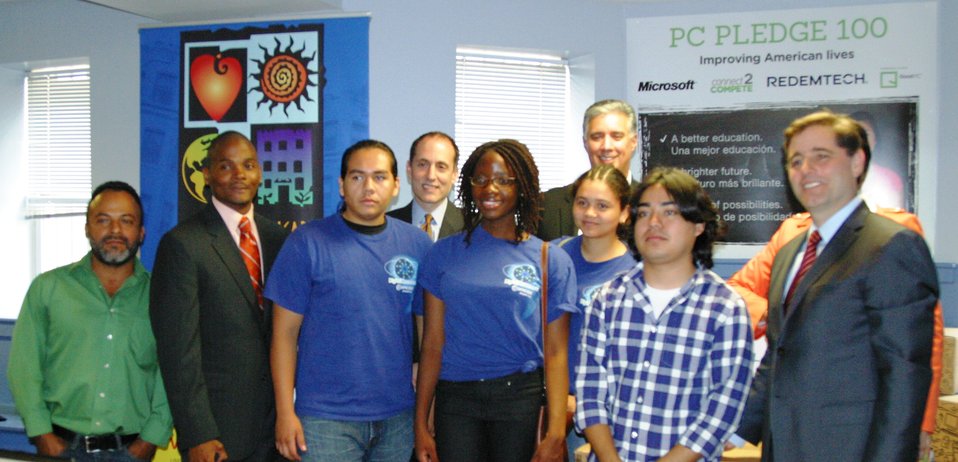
Connect 2 Compete: LULAC 8.7.12

FCC Chairman Genachowski, Ben Hecht, Chairman, Connect2Compete, Jill Vaske, Executive Vice President, Redemtech, Elliott Gaskins, Chief Development Officer, LAYC, & Darryl Morin, State Director, LULAC with kids from the League of United Latin American Citizens (LULAC) and the Latin American Youth Center (LAYC).